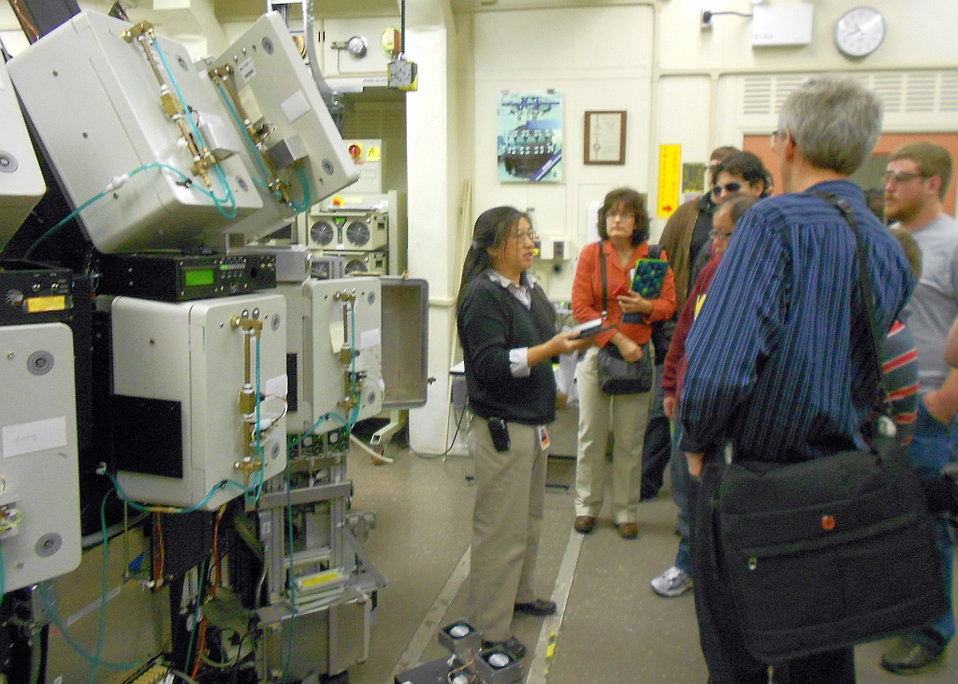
Rochester Community and Technical College Tour

Dr. Li-Piin Sung (left), a physicist with the NIST Engineering Laboratory’s Materials and Construction Research Division, describes the need to reliably measure and predict the service life of polymers, such as plastics, exposed to real world conditions. Using a device called a SPHERE which stands for Simulated Photo-degradation via High Energy Radiant Emission, NIST scientists create and control a number of environmental factors, including sunlight and humidity to more accurately measure their long term effects on building materials. Dr. Sung’s audience included students and faculty from Rochester Community and Technical College in Rochester, MN.